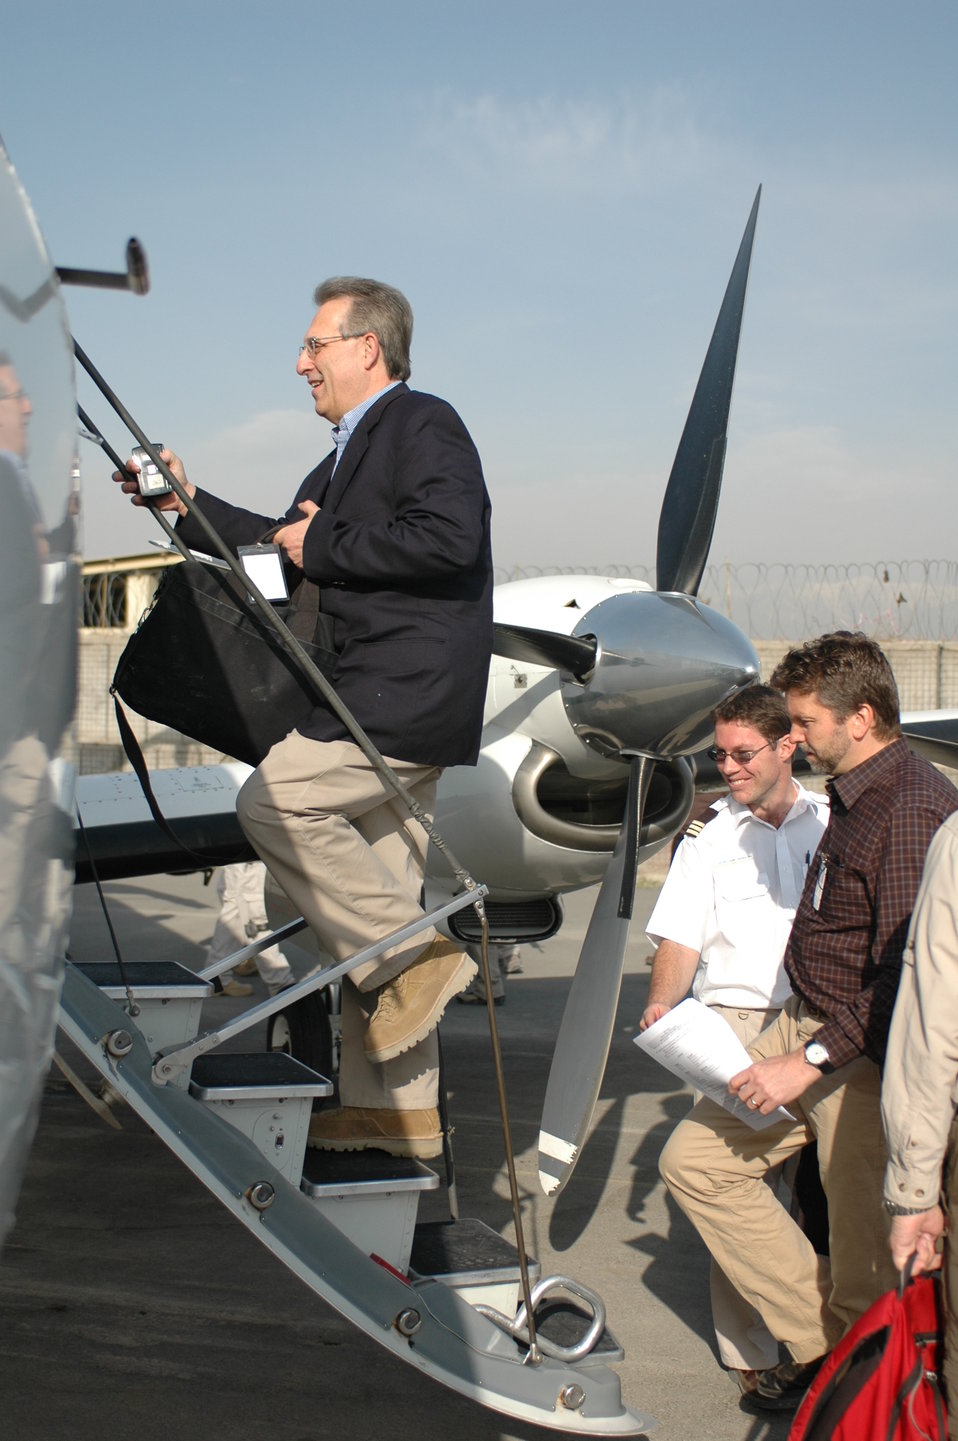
Dr Shah Visits Kandahar April 9, 2010